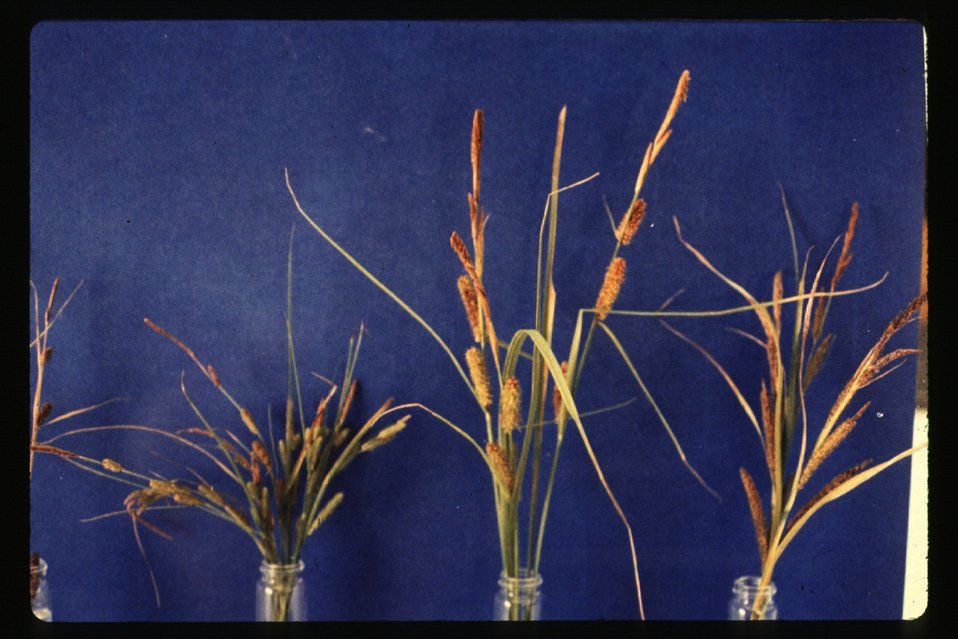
Carex Sedge grass-like